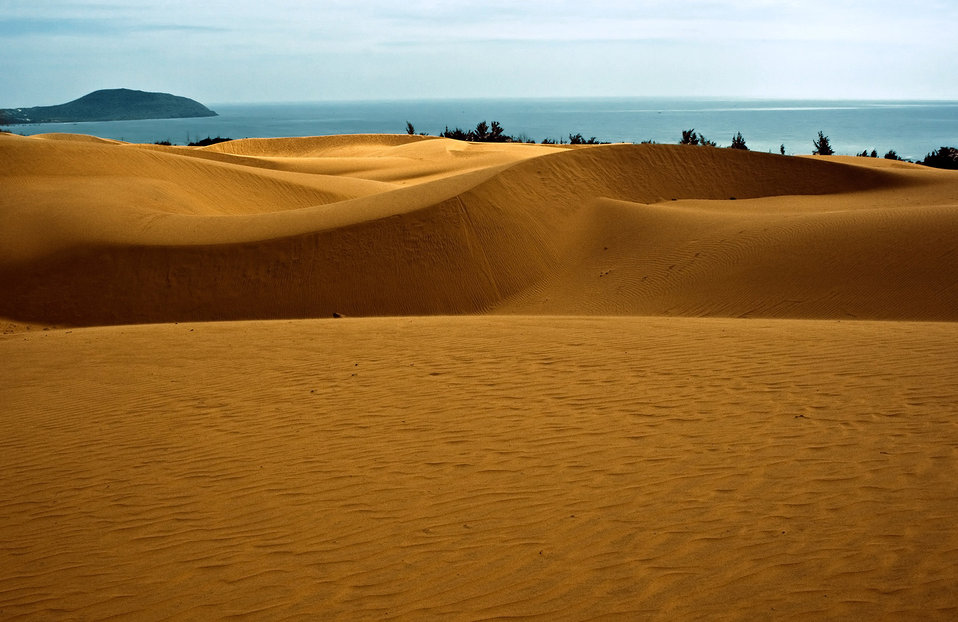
Mui ne sand dunes #8

Sand dunes of mui ne, phan thiet, vietnam..